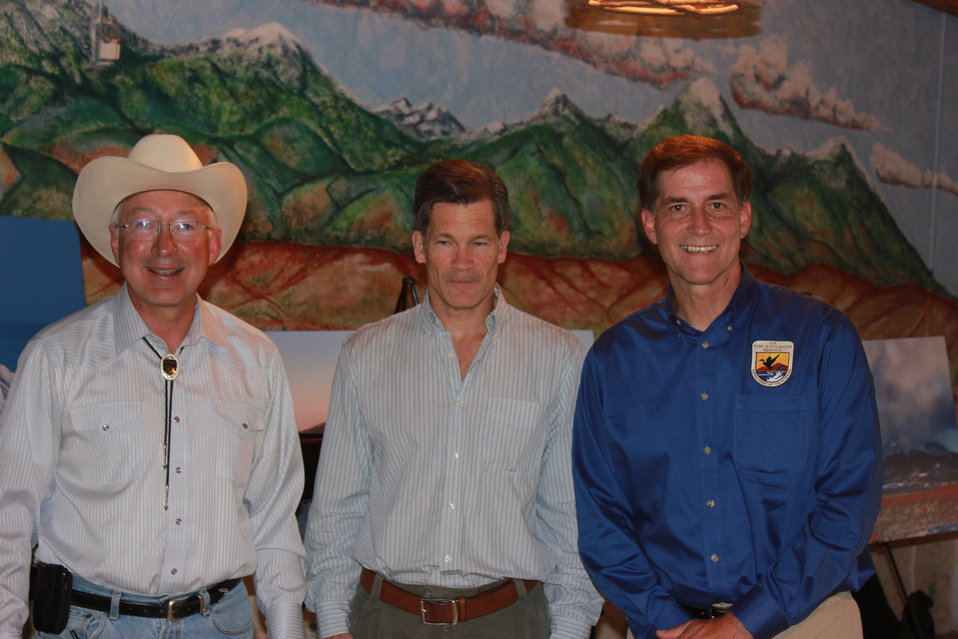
Historic Conservation Easement in Sangre de Cristo Mountains